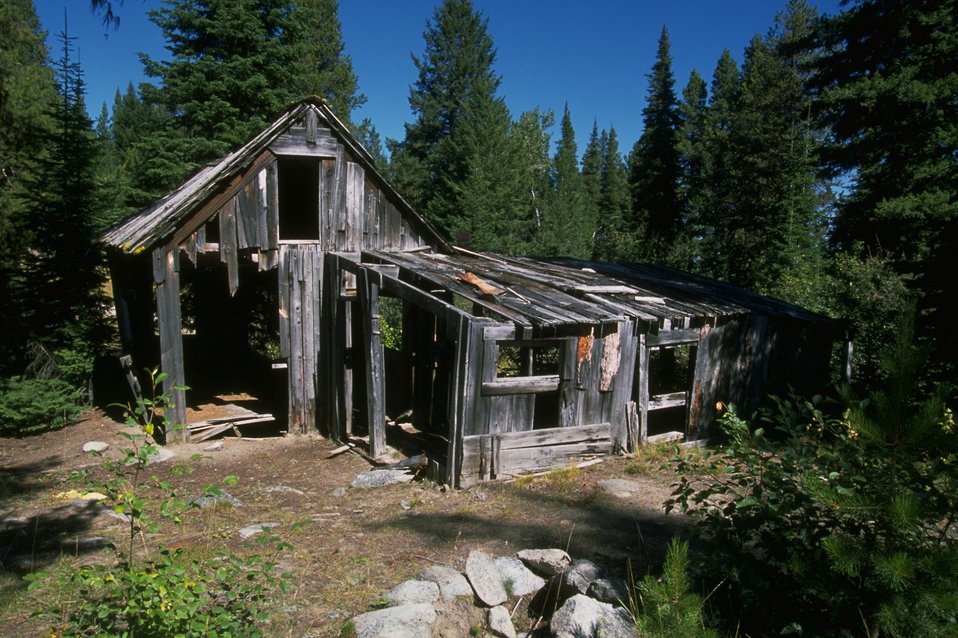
Dilapidated cabing in Coloma Ghost Town